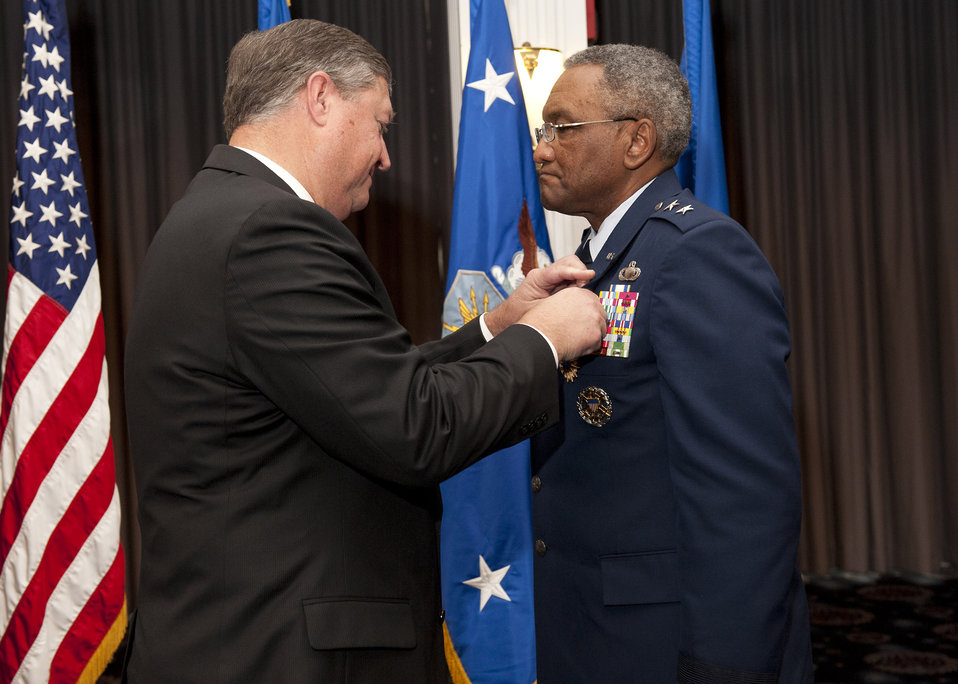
Maj. Gen. Alfred Flowers

Secretary of the Air Force Michael B. Donley presents Maj. Gen. Alfred K. Flowers the Distinguished Service Medal during the general’s retirement ceremony Nov. 17, 2011, at Joint Base Anacostia-Bolling, in Washington D.C. Flowers has served more than 46 years on active duty and is the longest serving Airman in Air Force history. Flowers is the deputy assistant secretary for budget.